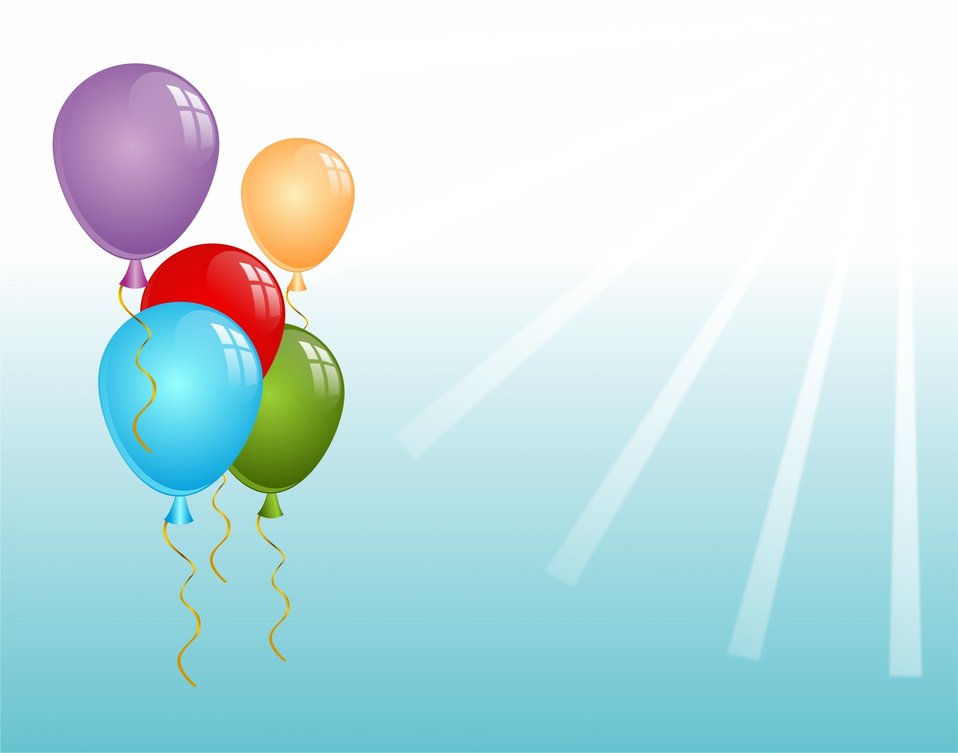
Balloons on a blue background.